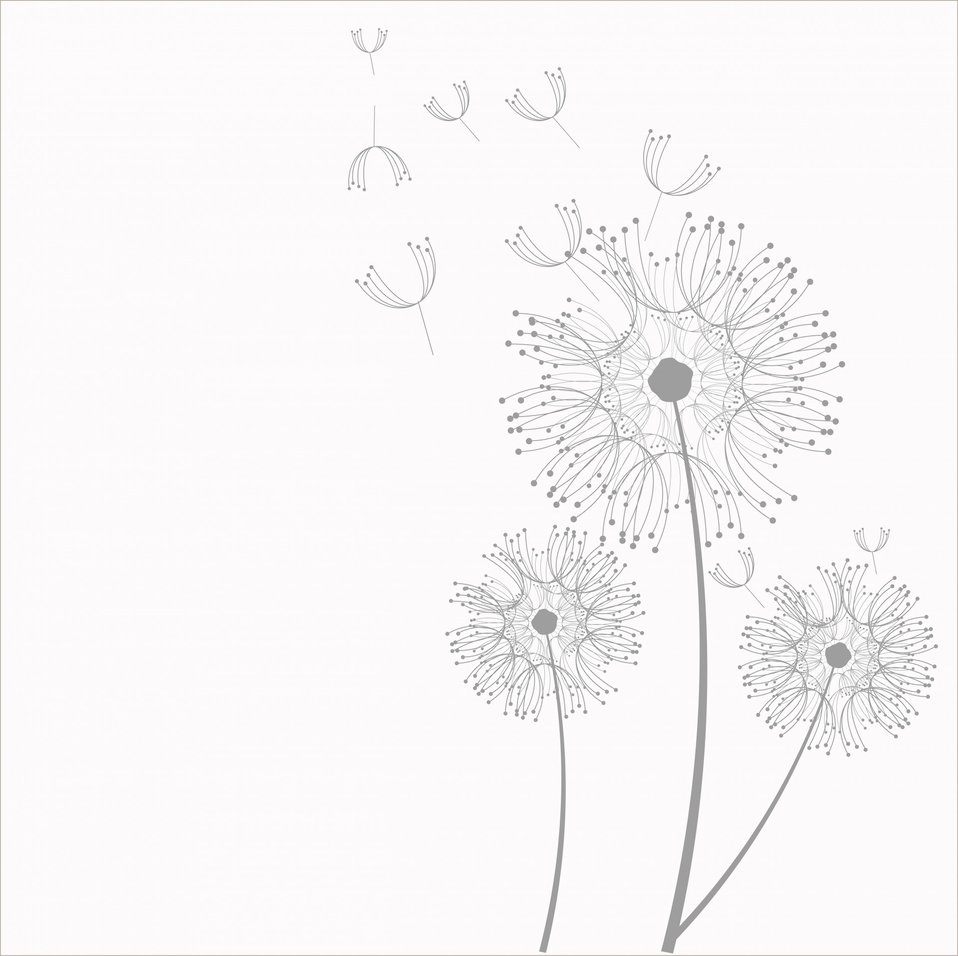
Dandelion flowers clipart

Dandelion flowers puff illustration clipart.